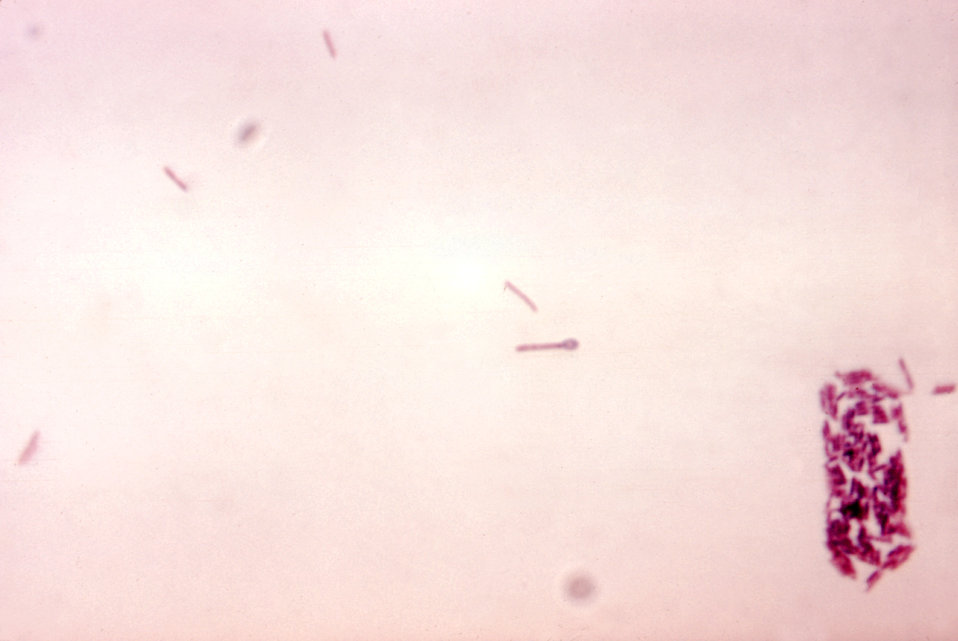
This is a photomicrograph of gram-positive Clostridium innocuum bacteria.